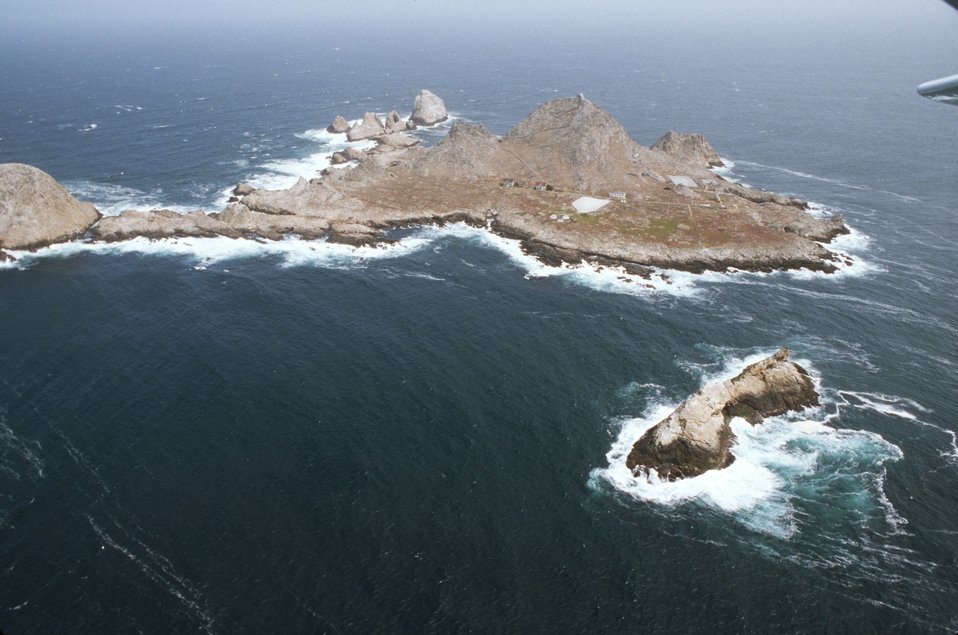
Aerial views of the wind-swept sea-swept Farallons, a virtual wilderness less than thirty miles from downtown San Francisco. Photo #1.